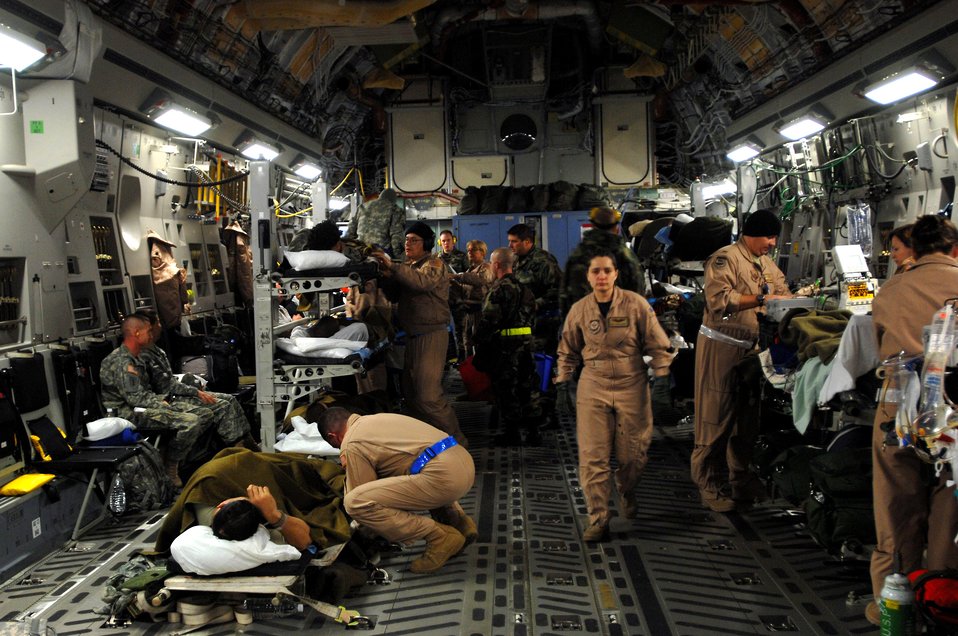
Another mercy mission returns

Members of the 723rd Air Medical Squadron are on the move Nov. 9 at Ramstein Air Base as they unload wounded military patients returning from downrange. The 723rd Airmen conduct four to five missions a day, helping wounded patients make it to their next destination for treatment and recovery.